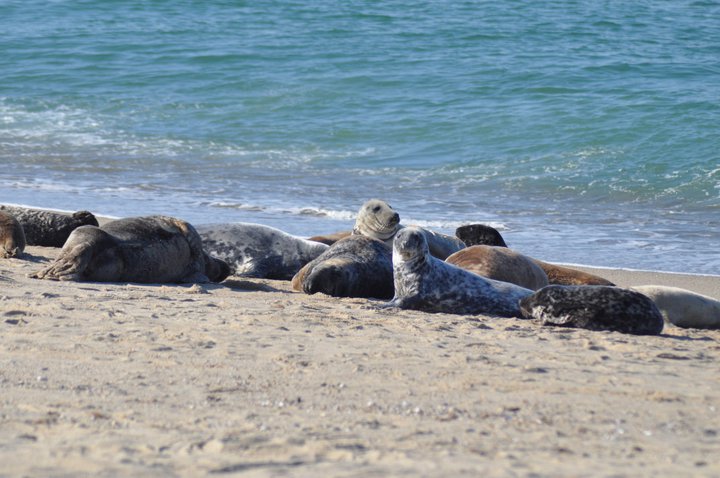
Seals at Nantucket National Wildlife Refuge in Massachusetts.